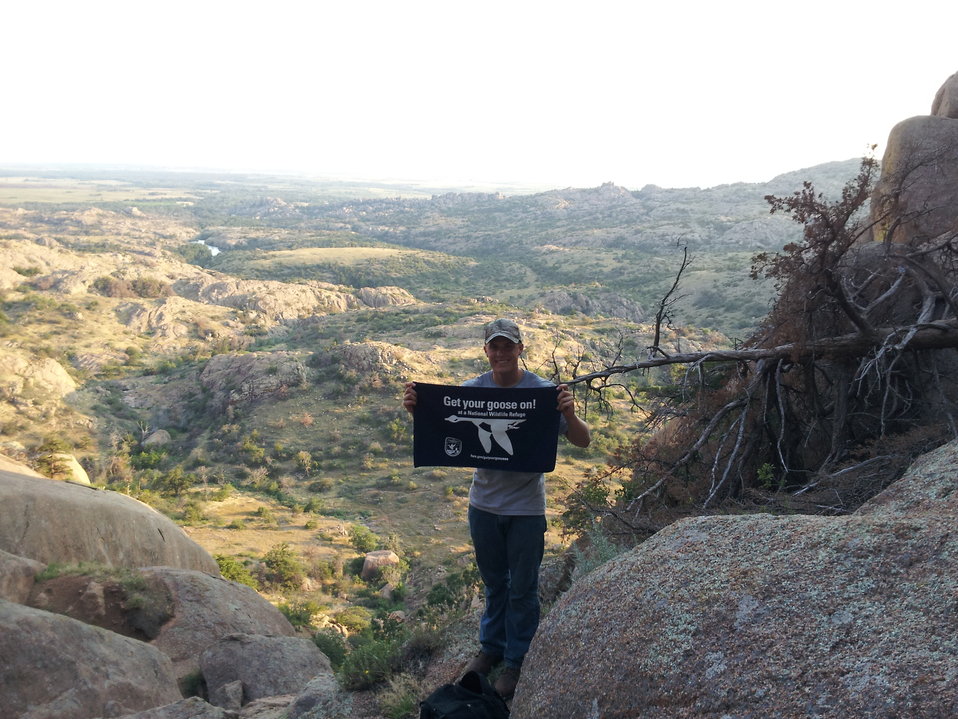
Get Your Goose On!

Wichita Mountains National Wildlife Refuge in Oklahoma.